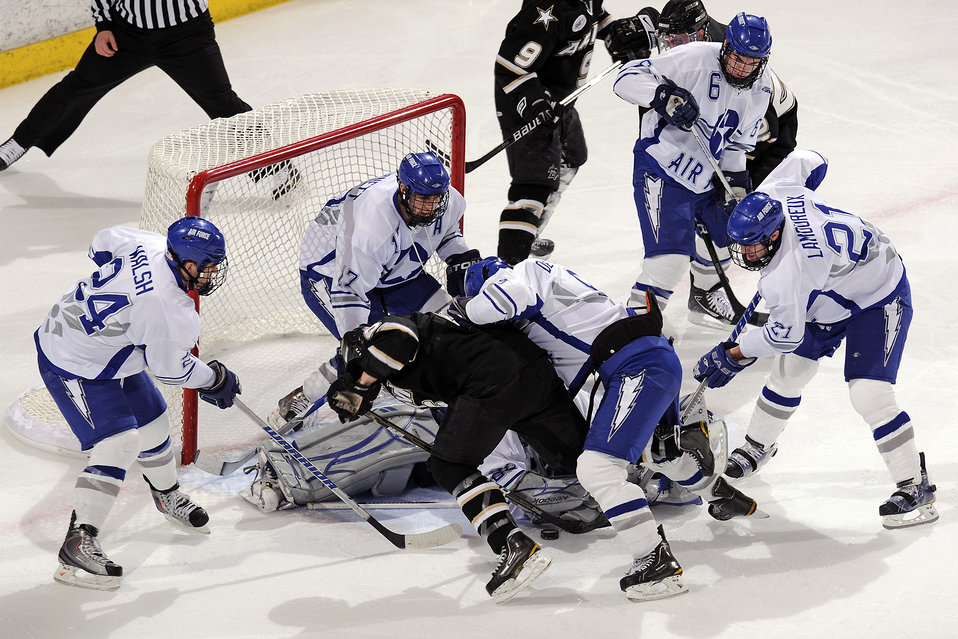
Falcons Split Two-Game Series

Falcons goalie Jason Torf successfully defends the goal during a flurry against the Army Black Knights Jan 15, 2011, at the Cadet Ice Arena in Colorado Springs, Colo. Army went on to defeat the Falcons 5-4.